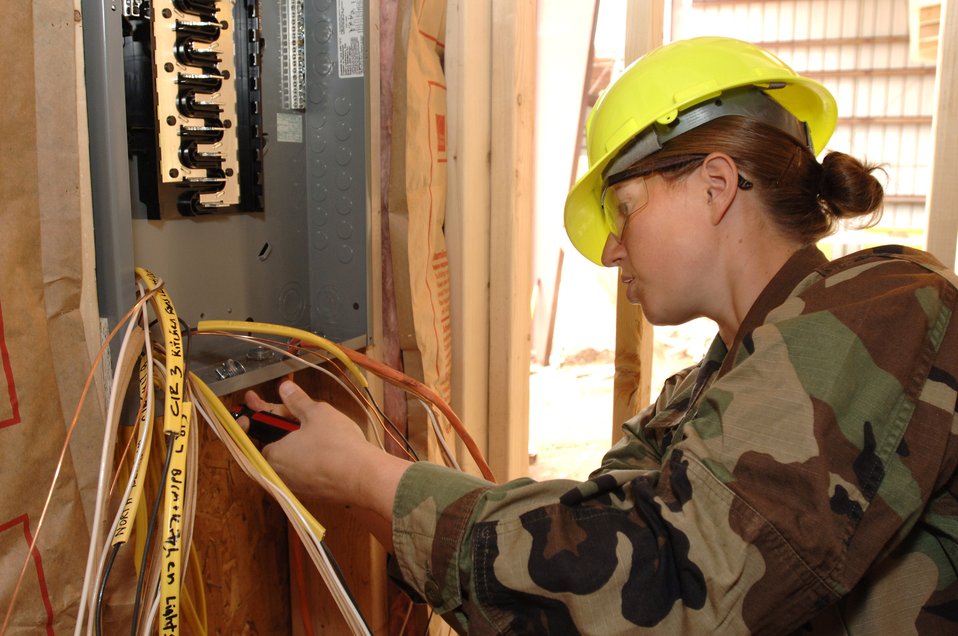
Summer lab gives cadets engineering experience

Air Force Academy Cadet 2nd Class Holly Bigalow installs wiring in a house being built by cadets during the Field Engineering and Readiness Laboratory course at the Academy. The course exposes cadets to several aspects of civil engineering, including heavy equipment operation, steel bridge construction, designing and pouring concrete beams and paving portions of a road.